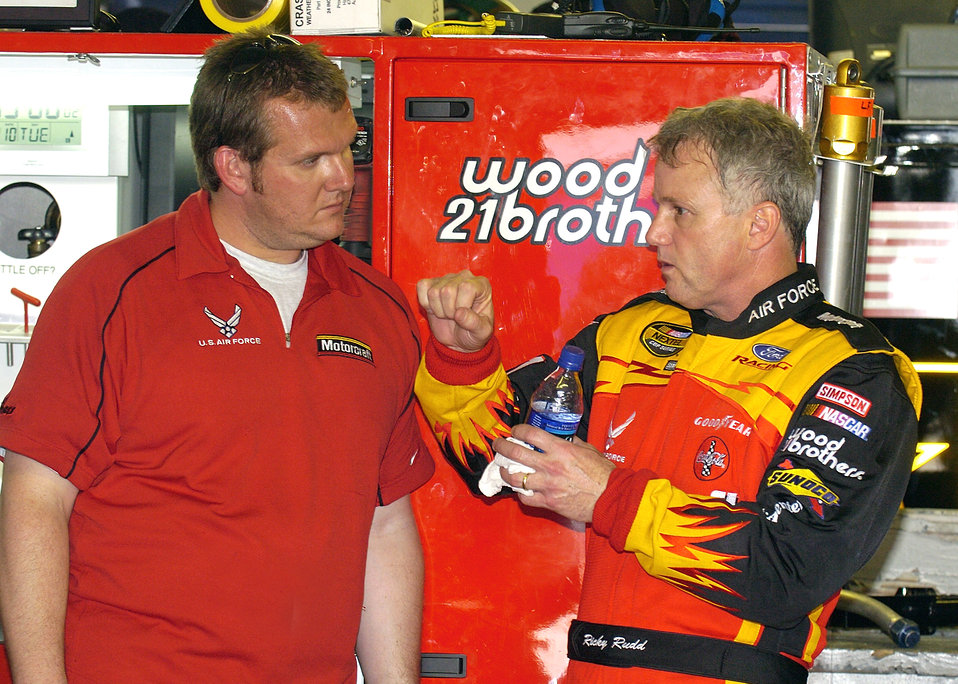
Race to the finish

DAYTONA INTERNATIONAL SPEEDWAY, Fla. -- Ricky Rudd, driver of the Air Force-sponsored Wood Brothers Racing No. 21 Ford Taurus goes over some car-handling details with his crew chief, Ben Leslie, following a practice session at the speedway Feb. 11. They are preparing for the Daytona 500 race, which will be held here Feb. 15.